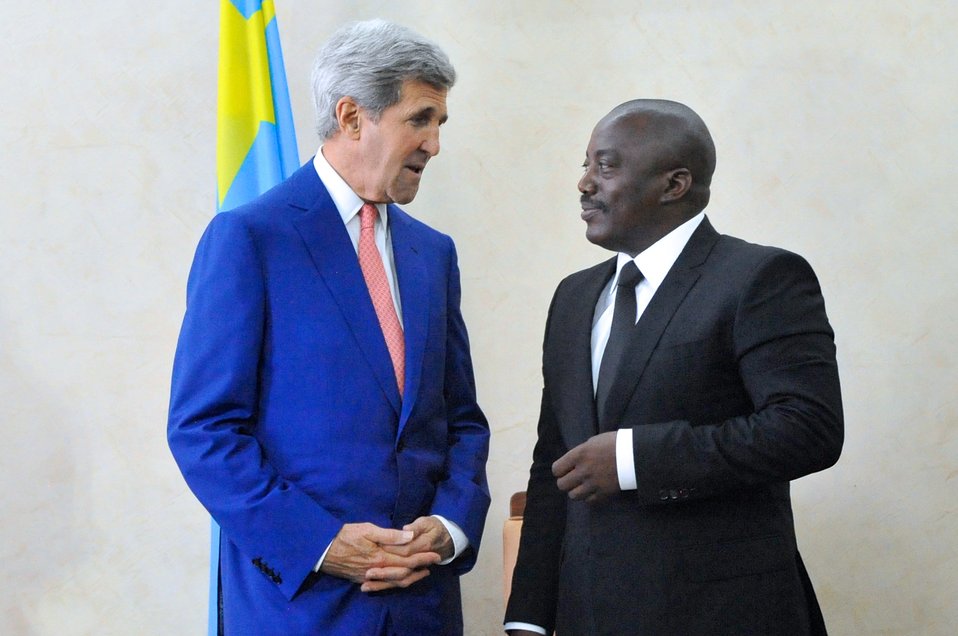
Secretary Kerry Chats With Democratic Republic of Congo President Kabila

U.S. Secretary of State John Kerry and Democratic Republic of Congo President Joseph Kabila chat before a bilateral meeting in Kinshasa on May 4, 2014.